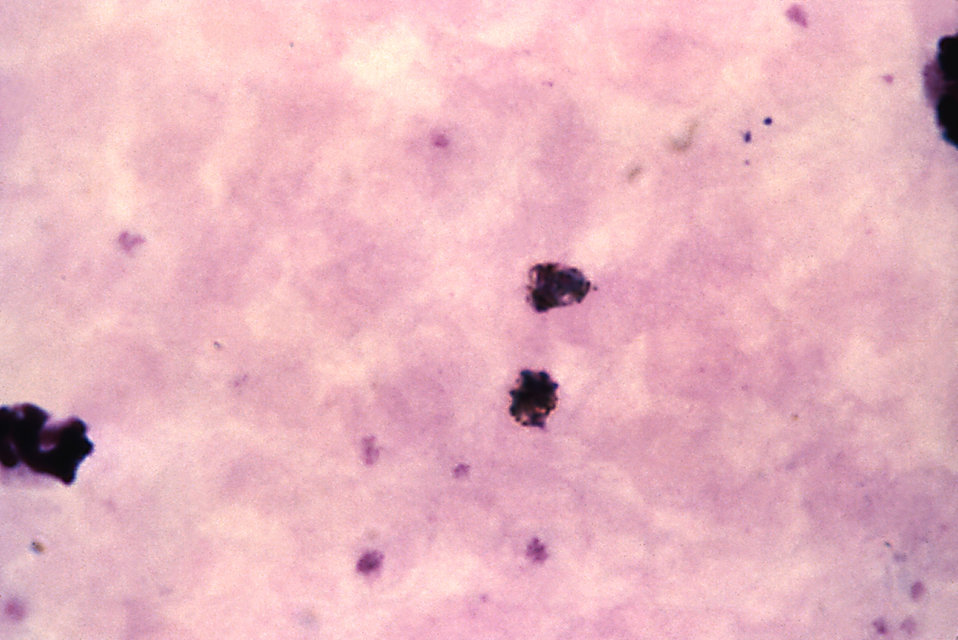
This thick film blood smear micrograph depicts immature staged Plasmodium malariae schizonts.